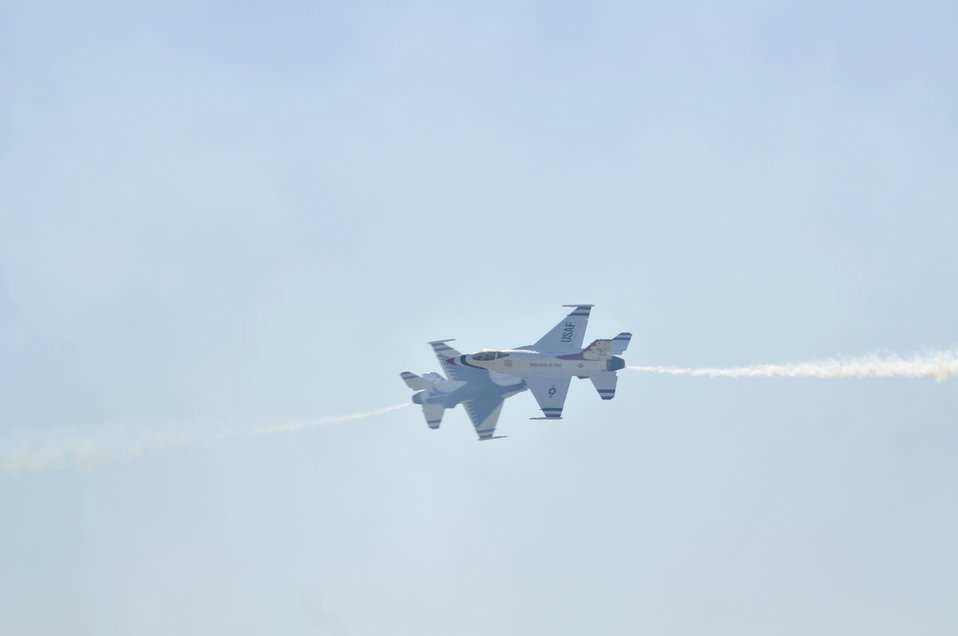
AirFest 2010

The U.S. Air Force air demonstration team, the Thunderbirds, perform precision aerial maneuvers Nov. 6, 2010, during AirFest 2010 at Lackland Air Force Base, Texas.